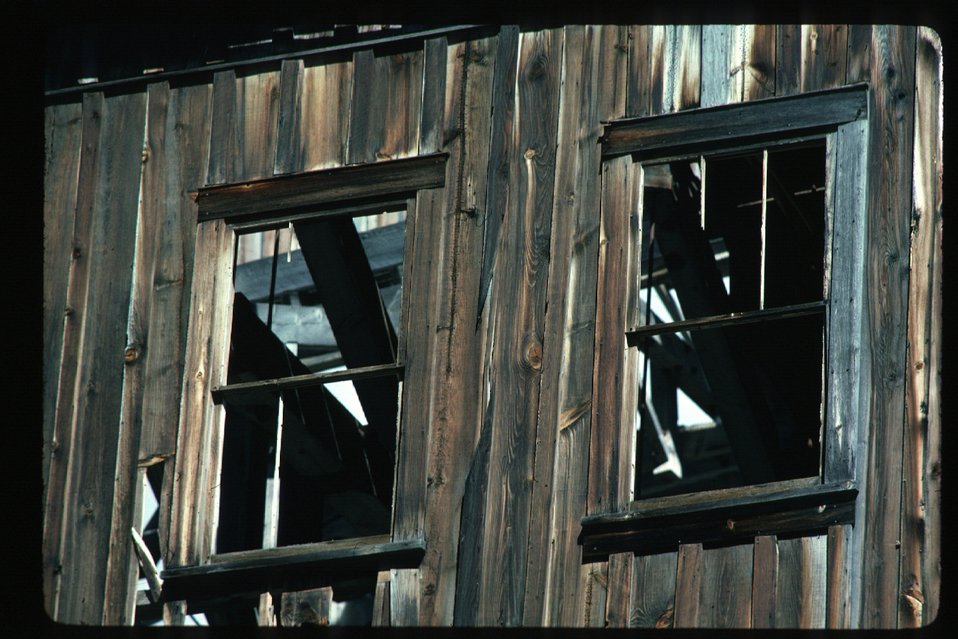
Tradedollar Mill Architecture Silver City Cultural Resources Owyhee Field Office LSRD Lower Snake River District